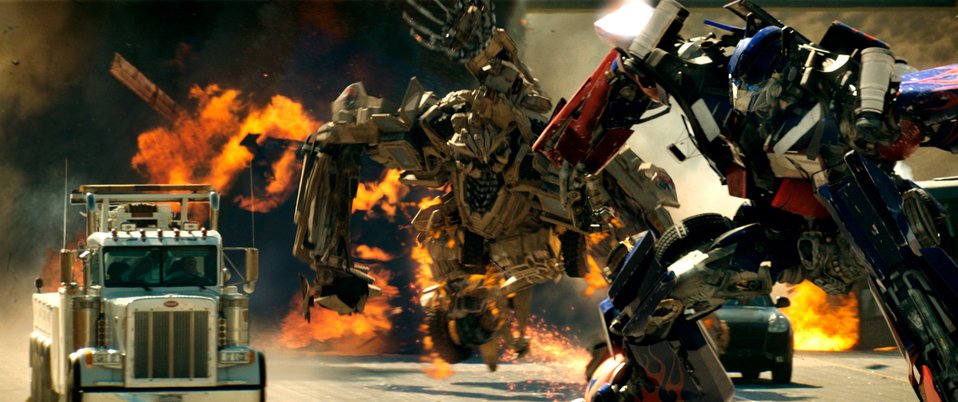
'Transformers' puts Airmen, aircraft on big screen

Bonecrusher and Optimus Prime battle in